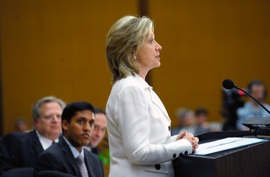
Secretary Clinton Delivers Remarks at Pride Month Celebration Event

U.S. Secretary of State Hillary Rodham Clinton delivers remarks at an event celebrating LGBT Pride Month at the U.S. Department of State in Washington, D.C., on June 22, 2010.